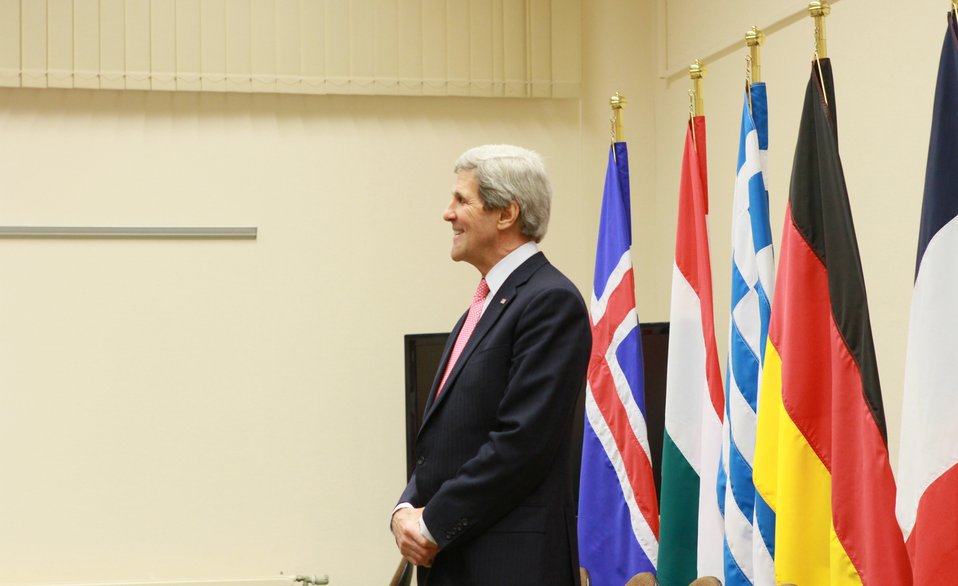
Secretary Kerry Waits for a Meeting With the Czech Minister of Foreign Affairs

U.S. Secretary of State John Kerry relaxes while awaiting a bilateral Mmeting with the Czech Minister of Foreign Affairs in Brussels, Belgium, on April 23, 2013.